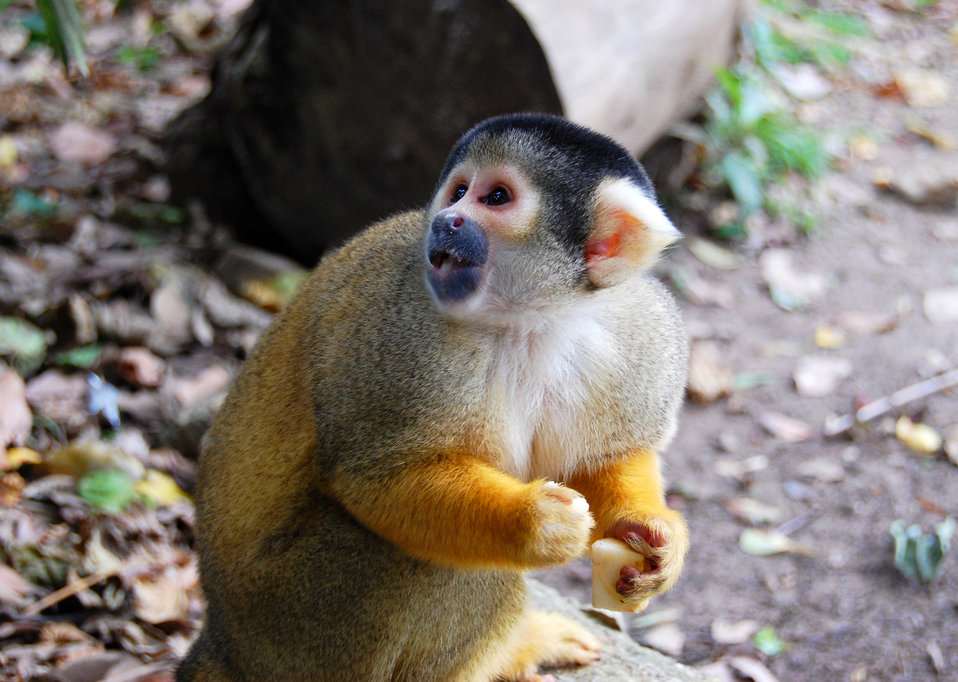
Monkey

The monkey which is eating food..